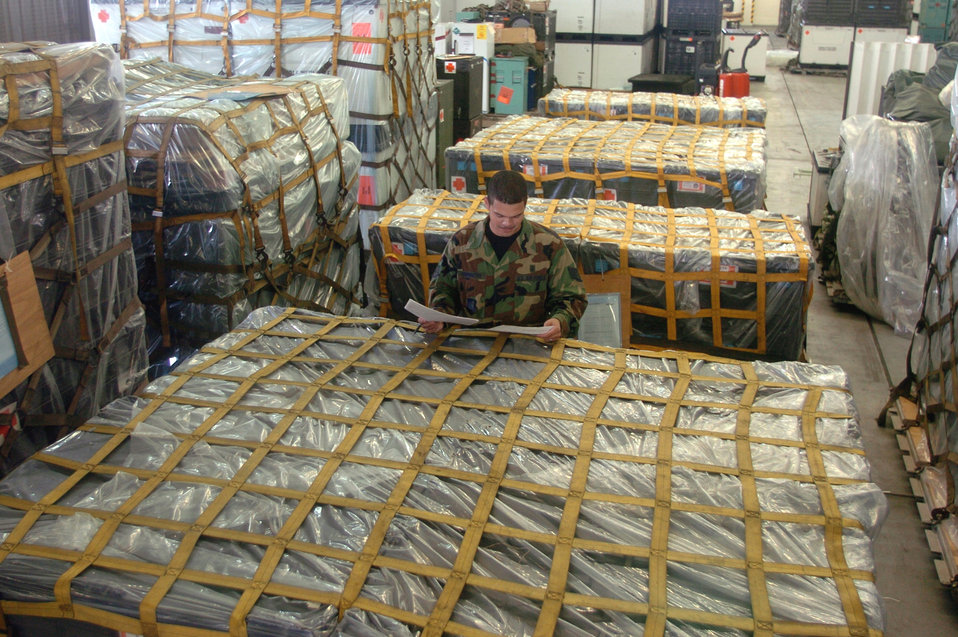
Airmen ensure medical lifeline in Pacific

YOKOTA AIR BASE, Japan -- Staff Sgt. Ken Abernathy checks the inventory sheet for expeditionary medical support pallets during an inspection at a warehouse here. An EMEDS kit is a modern field hospital that can fill as many as 30 cargo pallets. The kit contains more than 1,100 equipment items. Sergeant Abernathy and other medical logistics technicians from the 374th Medical Group handle about $24 million dollars worth of medical war reserve materiel supplies and equipment here for military combat and contingency operations.